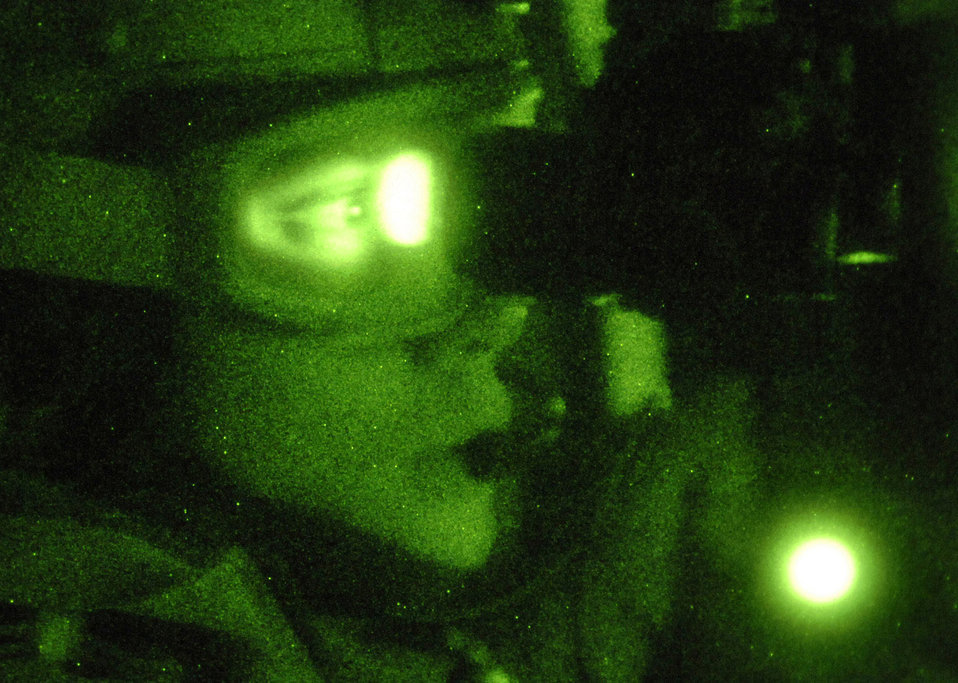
Pararescue Airmen mission ready for search, rescue

Pararescue jumper Staff Sgt. Eric Kelly scouts for enemy combatants during a combat search and rescue rehearsal mission outside Feb. 24 outside Balad Air Base, Iraq. Sergeant Kelly is assigned to the 64th Expeditionary Rescue Squadron.